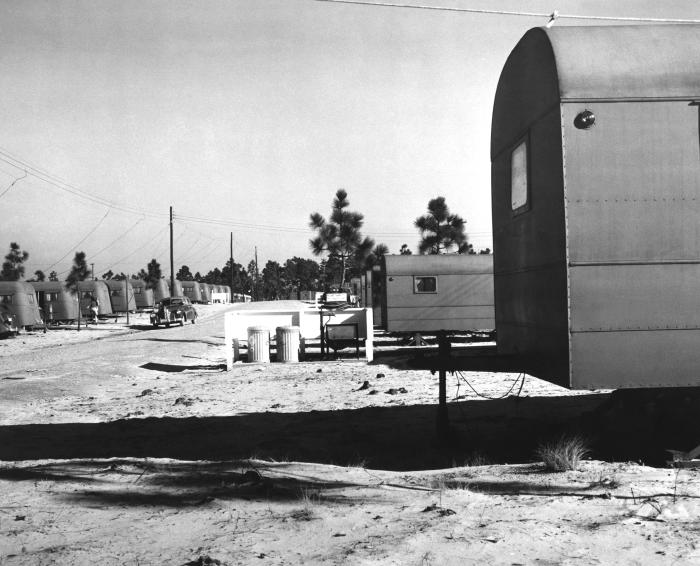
Provided by the Center for Disease Control's (CDC), National Institute for Occupational Safety and Health (NIOSH), this historic 1943 image depicted a view of a North Carolina workcamp trailer park, which was located onsite at an industrial workplace. In this particular view, a number of trailers were arranged in rows, and a roadway was routed in between on which an automobile was parked.